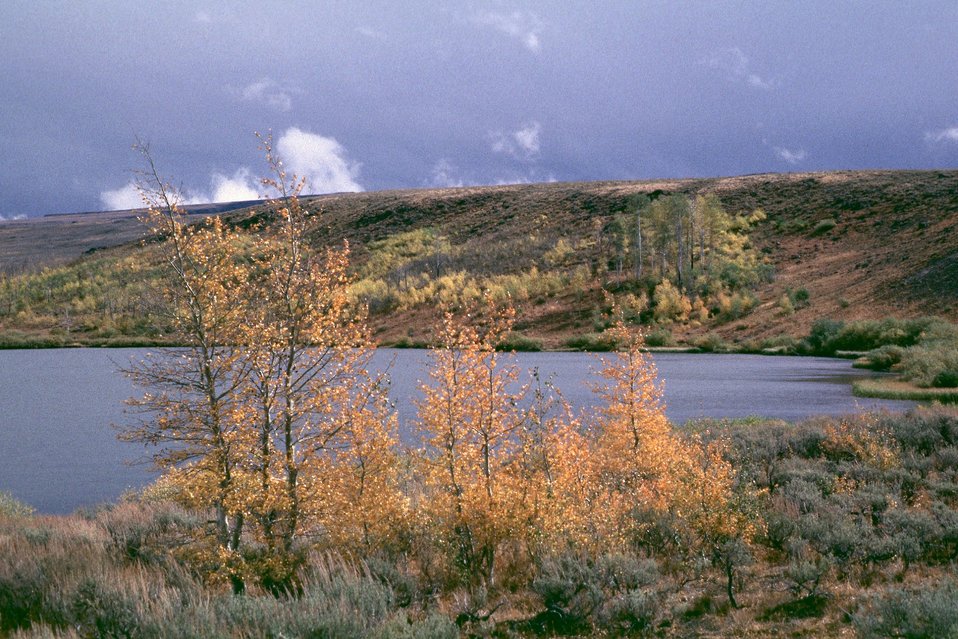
Fish Lake, Steen's Mountain.